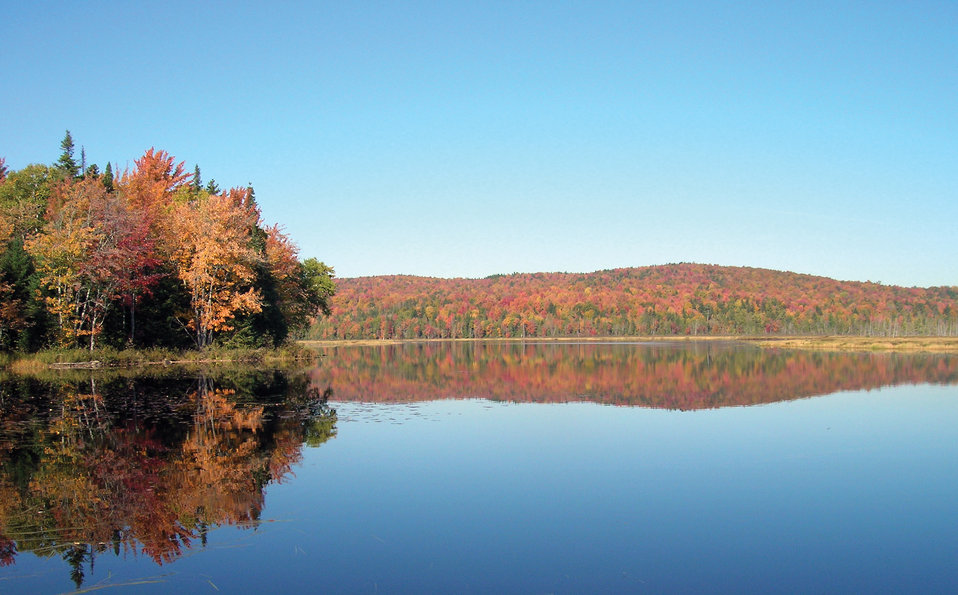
Photo of the Week - Harper's Meadow at Umbagog National Wildlife Refuge

Photo of the Week - 1/12/10

Fall at Harper's Meadow, Umbagog National Wildlife Refuge (NH and ME)